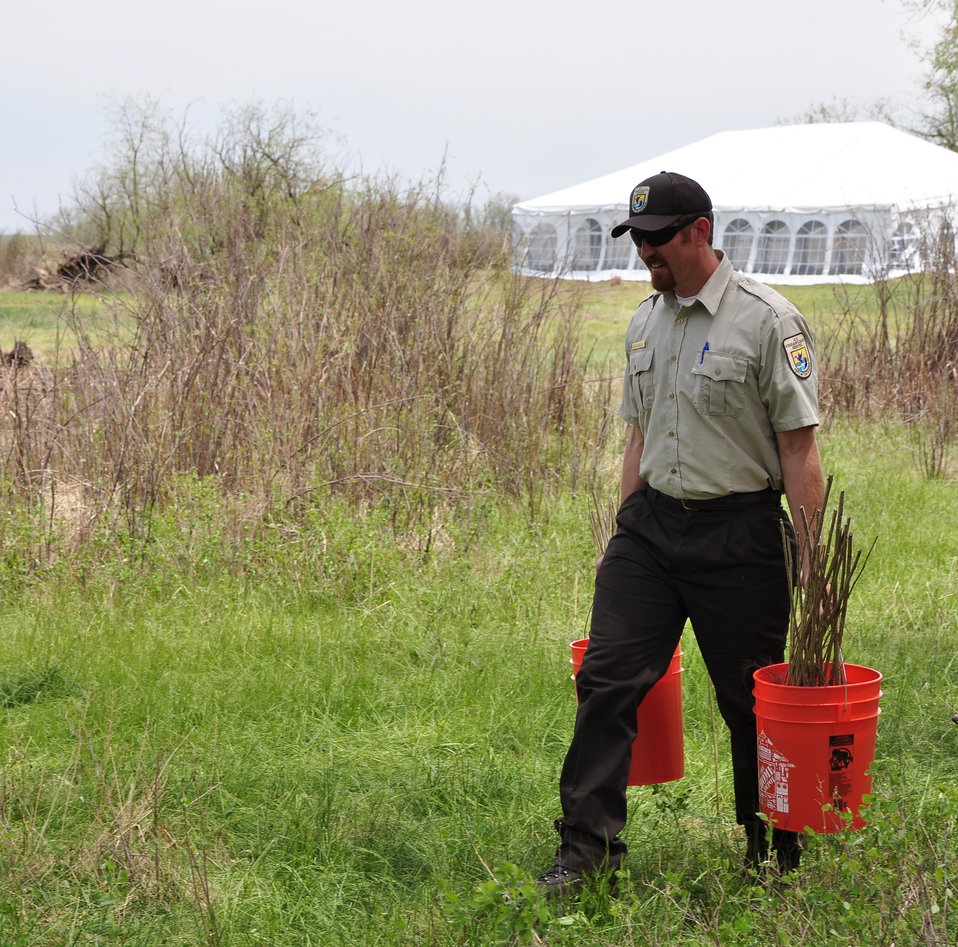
Carrying Cottonwood Trees out to the Work Site